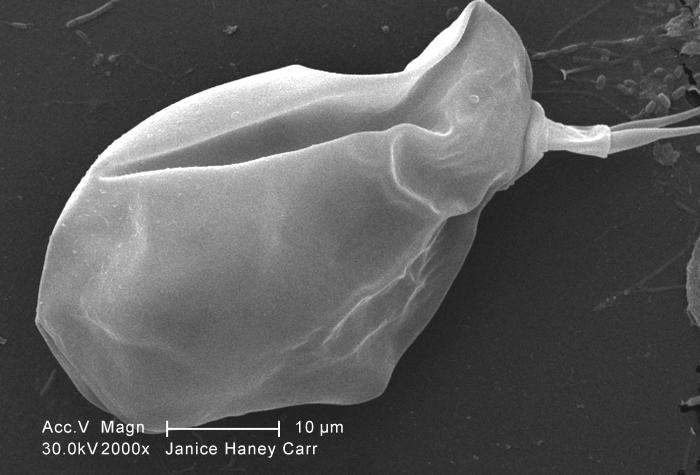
Under a moderate magnification of 2000X, this scanning electron micrograph (SEM) of an untreated water specimen extracted from a wild stream mainly used to control flooding during inclement weather, revealed the presence of unidentified organisms, which included bacteria, protozoa, and algae. In this particular view, a single copepod-like microorganism was seen occupying the field of view. Also, if you look closely towards the upper right corner, you'll also notice the small grouping of bacteria, which had become enmeshed in a patch of biofilm. See PHIL 11791 for a colorized version of this image.